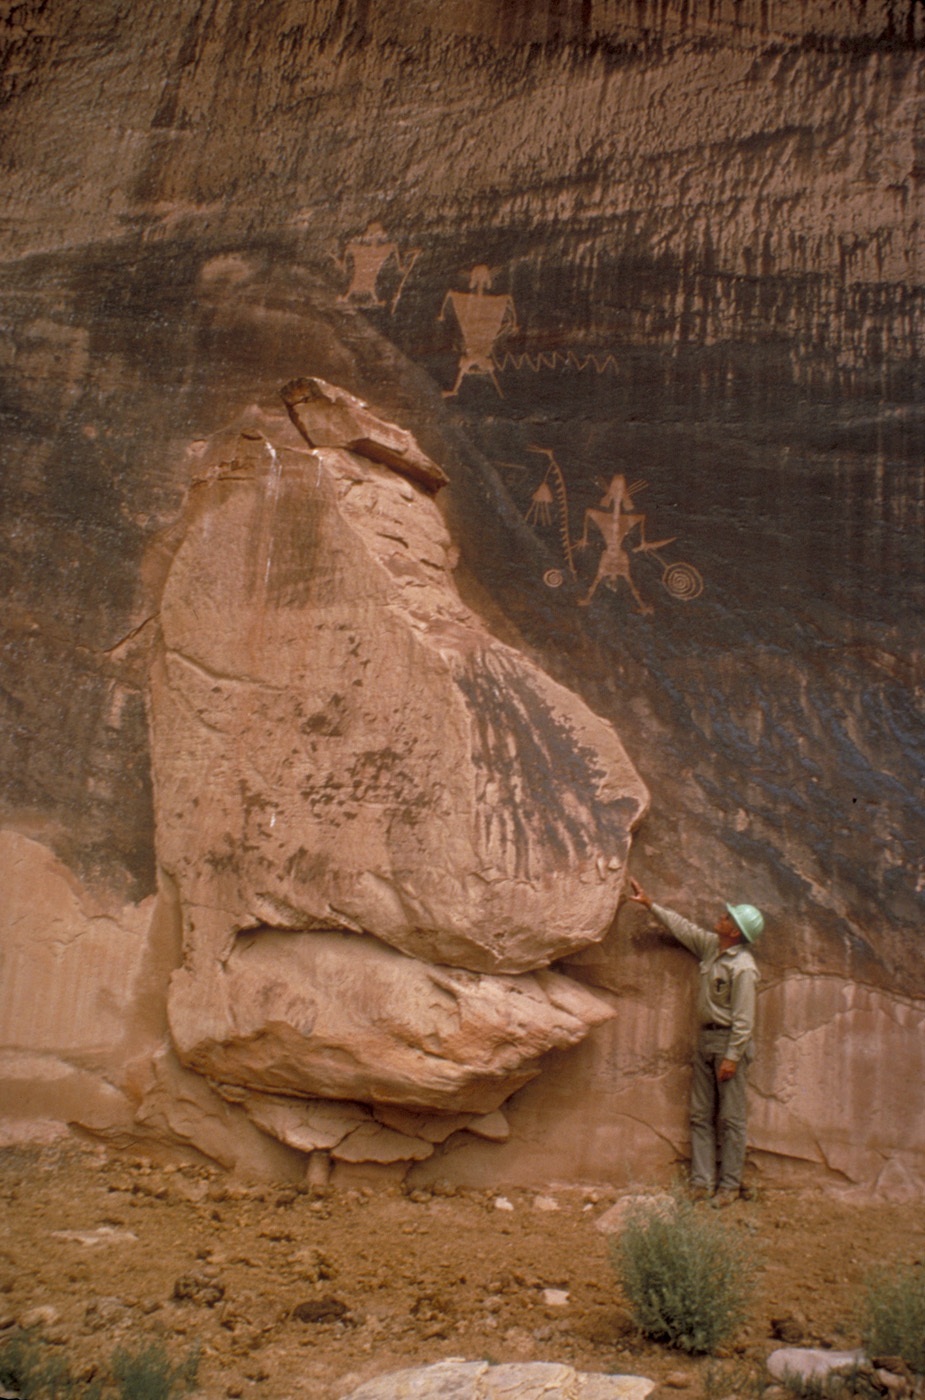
Pictographs near Miracle Rock.